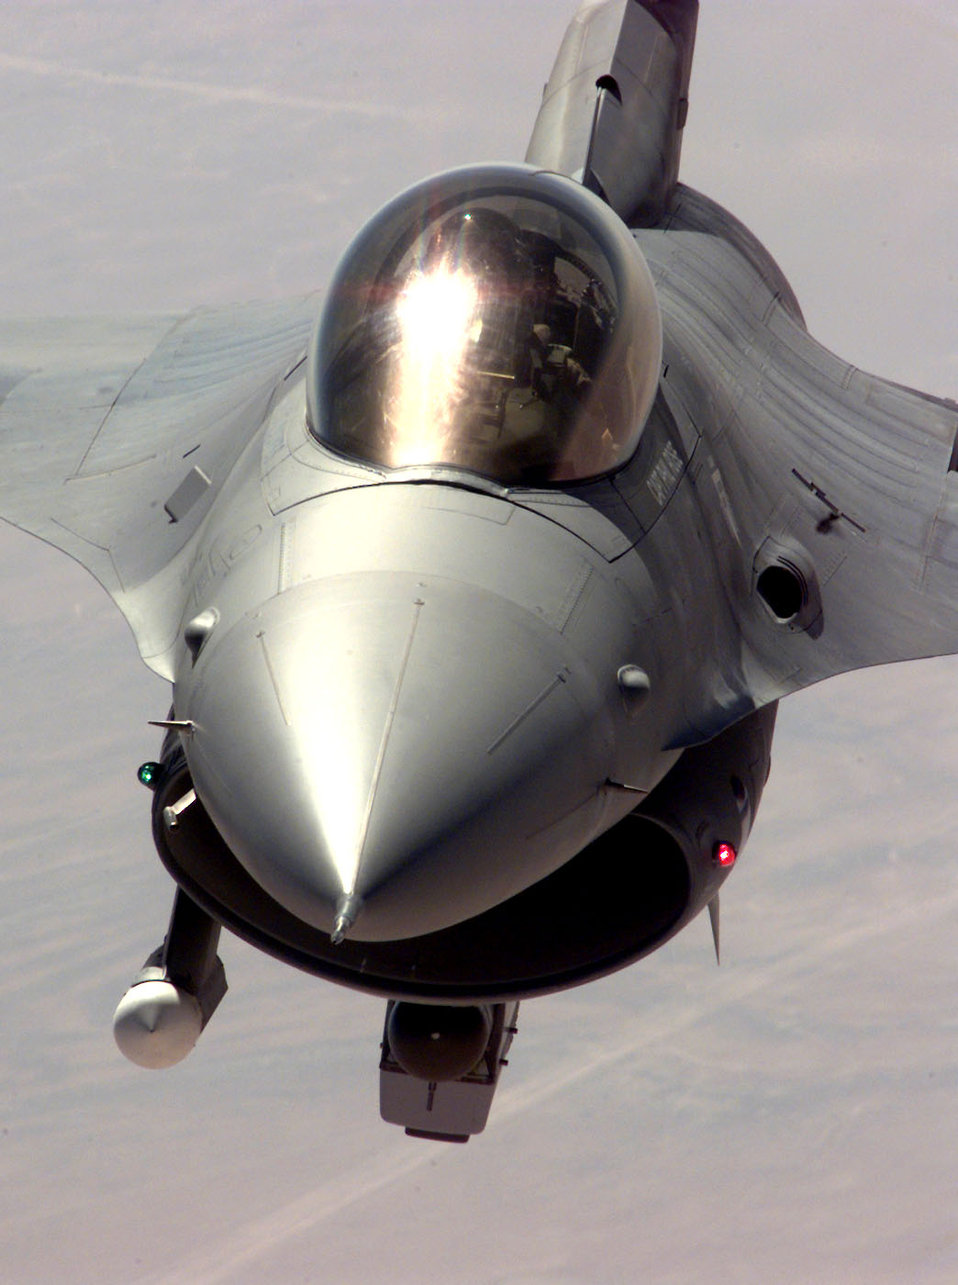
F-16 Fighting Falcon

FILE PHOTO -- The F-16 Fighting Falcon is a compact, multi-role fighter aircraft. It is highly maneuverable and has proven itself in air-to-air combat and air-to-surface attack. It provides a relatively low-cost, high-performance weapon system for the United States and allied nations.